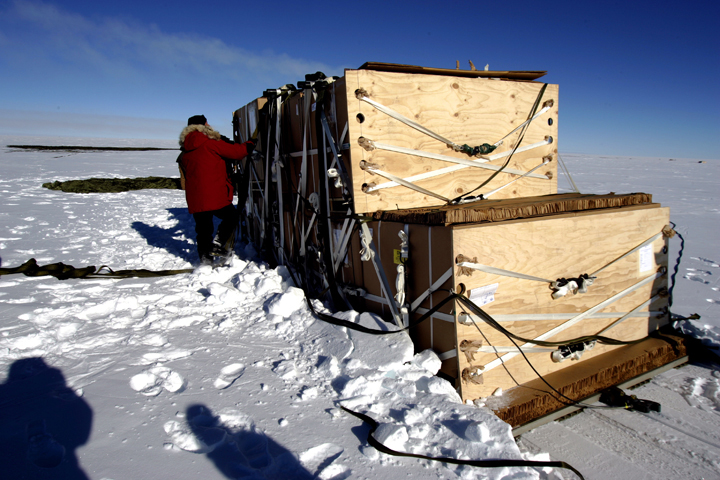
C-17 makes its first South Pole airdrop

A member of the National Science Foundation wintering in the Antarctic checks a cargo pallet airdropped by a C-17 Globemaster III Dec. 20. Airmen from the 62nd and 446th Airlift Wings at McChord Air Force Base, Wash., delivered 70 tons of supplies to the team. The mission was a